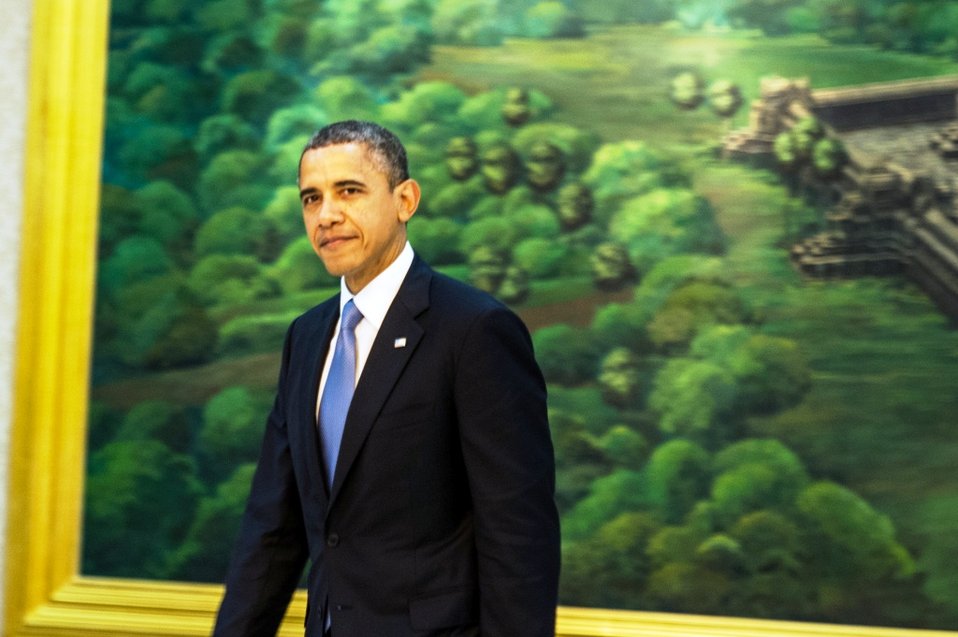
President Obama at the ASEAN-U.S. Leaders' Meeting

U.S. President Obama participates in the ASEAN-United States Leaders' Meeting at the Peace Palace in Phnom Penh, Cambodia, November 19, 2012. President Obama is the first U.S. President to visit Cambodia.